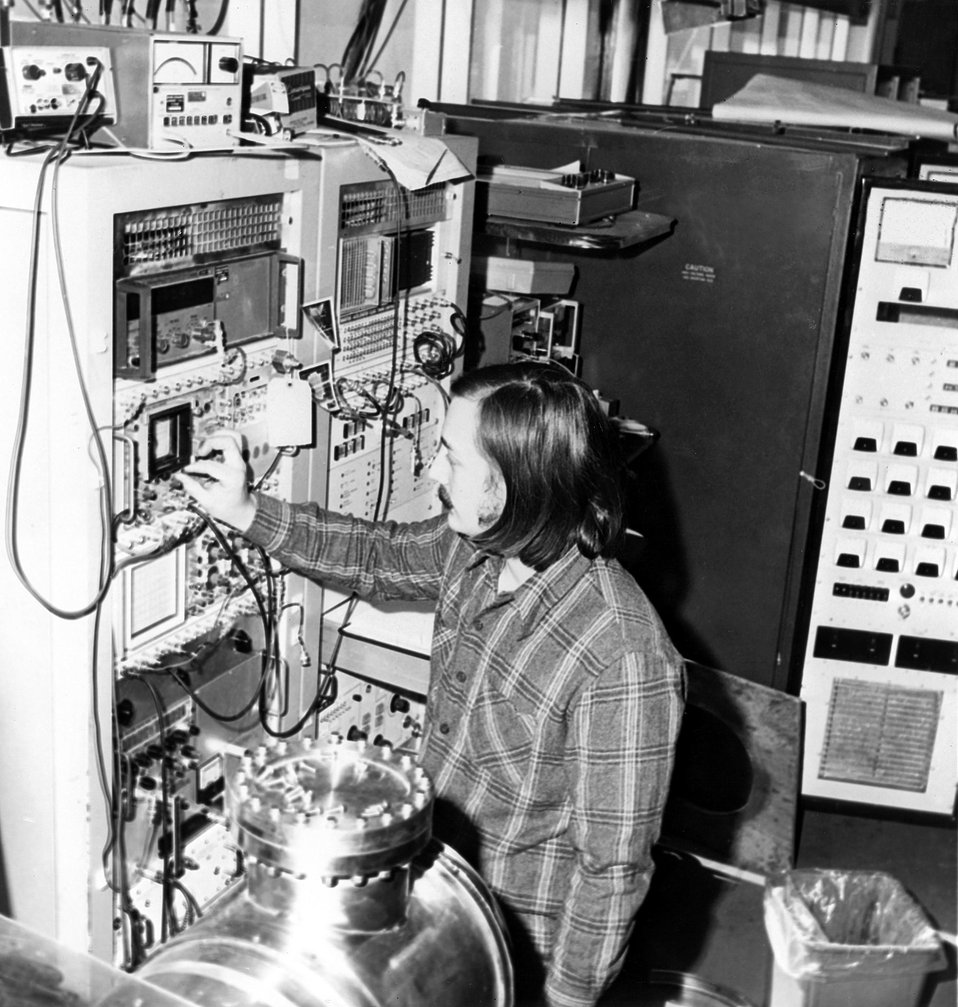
A technician turns a booster radio frequency test station.